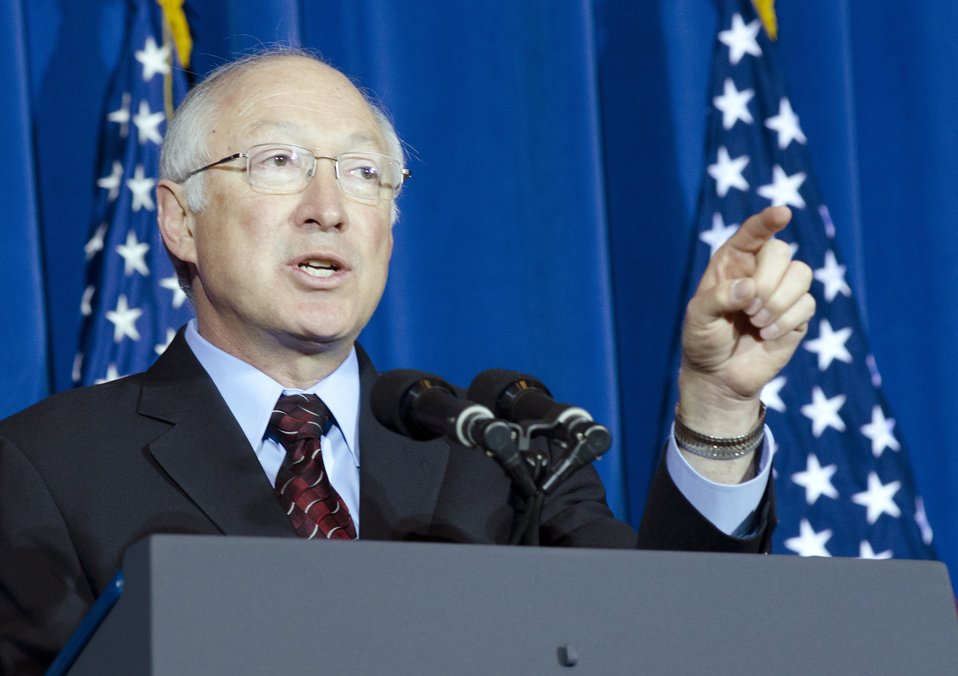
Interior Secretary Ken Salazar made opening remarks at the White House Conservation Summit “Growing America’s Outdoor Heritage and Economy” held at the Interior Department in Washington, D.C., on Friday, March 2, 2012. This conference was part of President Barrack Obama’s, “America’s Great Outdoors Initiative” to spotlight community-driven conservation efforts and discussed how to build their success.